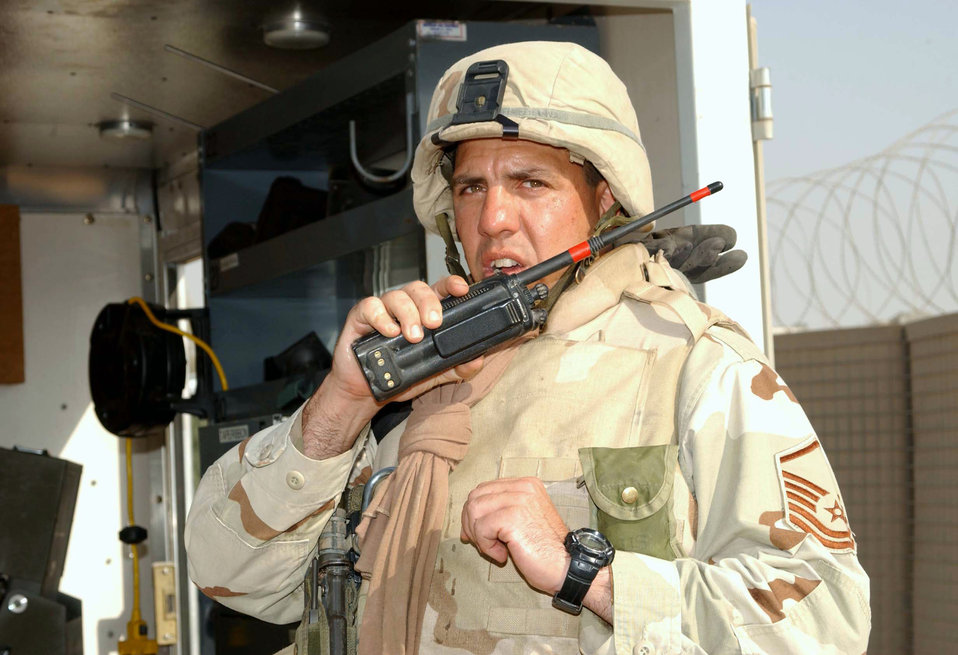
EOD Airmen rely on high-tech, raw nerves

ALI BASE, Iraq -- Master Sgt. Thomas Carroll checks with the rest of his team by radio as they prepare to send a robot to investigate a suspicious package found unattended on base. He is an explosive ordnance disposal team chief with the 407th Air Expeditionary Group.